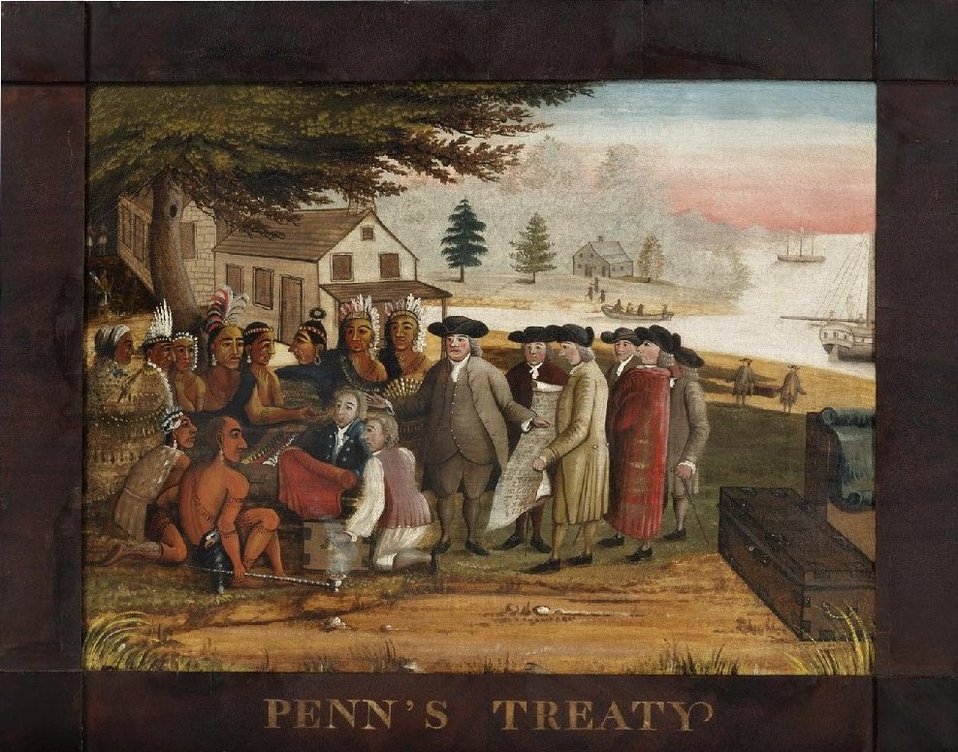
Penn's Treaty [with the Indians], oil on canvas painting by Edward Hicks, 1830-35, Philadelphia Museum of Art